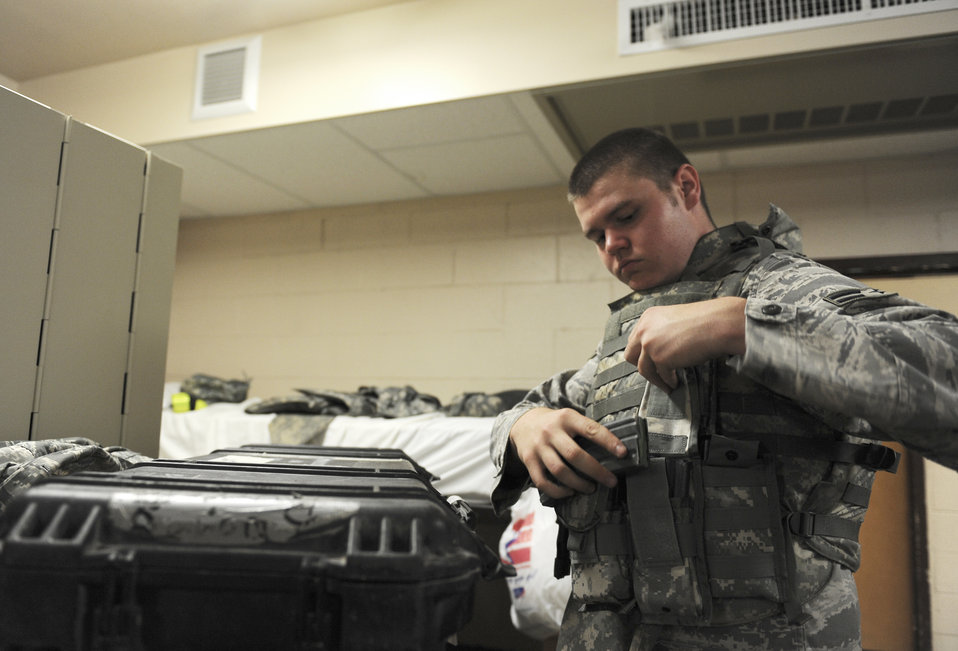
Combat Skills Training

Airman 1st Class Brandon Scott inspects his equipment during Combat Skills Training July 26 at Fort Dix, N.J. CST is a month-long Army training program that prepares Airmen for Joint Expeditionary Tasking combat roles augmenting the U. S. Army in support of operations Enduring and Iraqi Freedom. He is a ground radio maintenance apprentice assigned to the 422nd Communications Squadron at Royal Air Force Croughton, England.